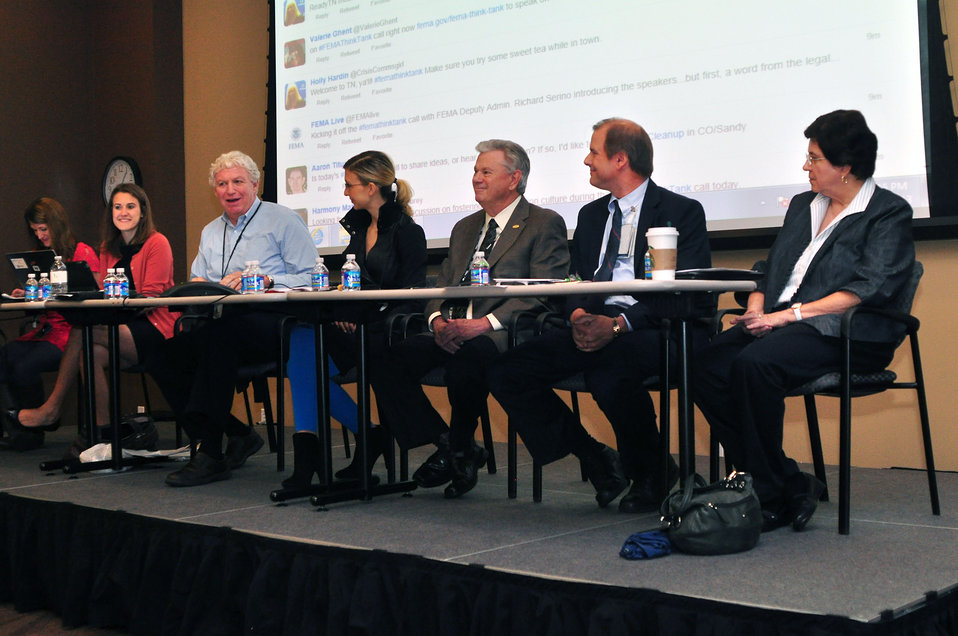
FEMA Think Tank in Oak Ridge 2013

13-116-202 DOE photo Lynn Freeny 9-26-2013 Oak Ridge Tennessee